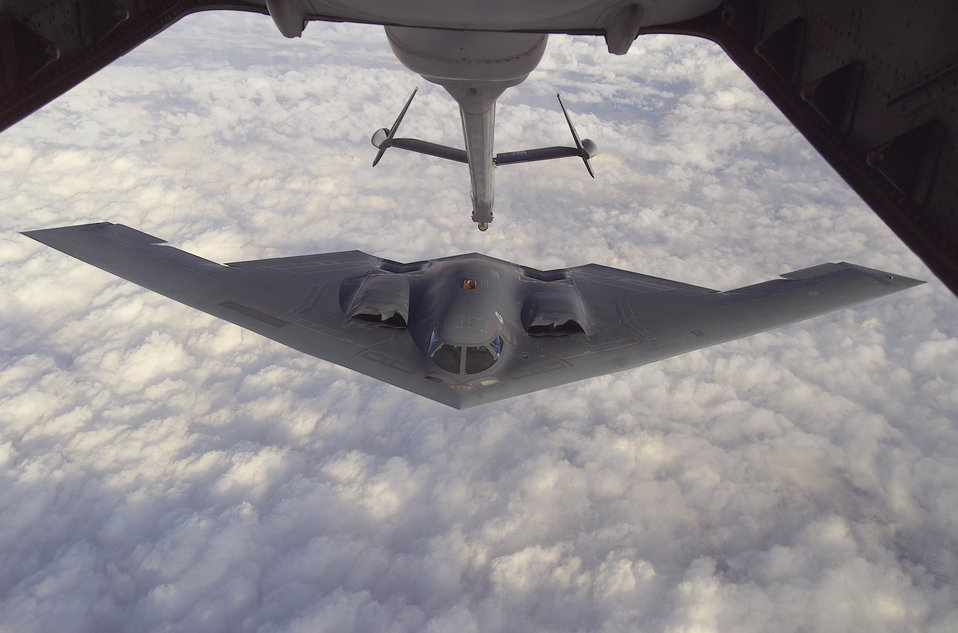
Capstone flight

FILE PHOTO -- The B-2 Spirit approaches the boom of a McGuire Air Force Base, New Jersey KC-10A Extender during a Capstone orientation flight. Capstone is a Joint Airborne/Air Transportability Training mission providing interservice training for the wartime application of airlift. Through Capstone, senior level officers are able to observe the significance of airlift and its role in all military operations.